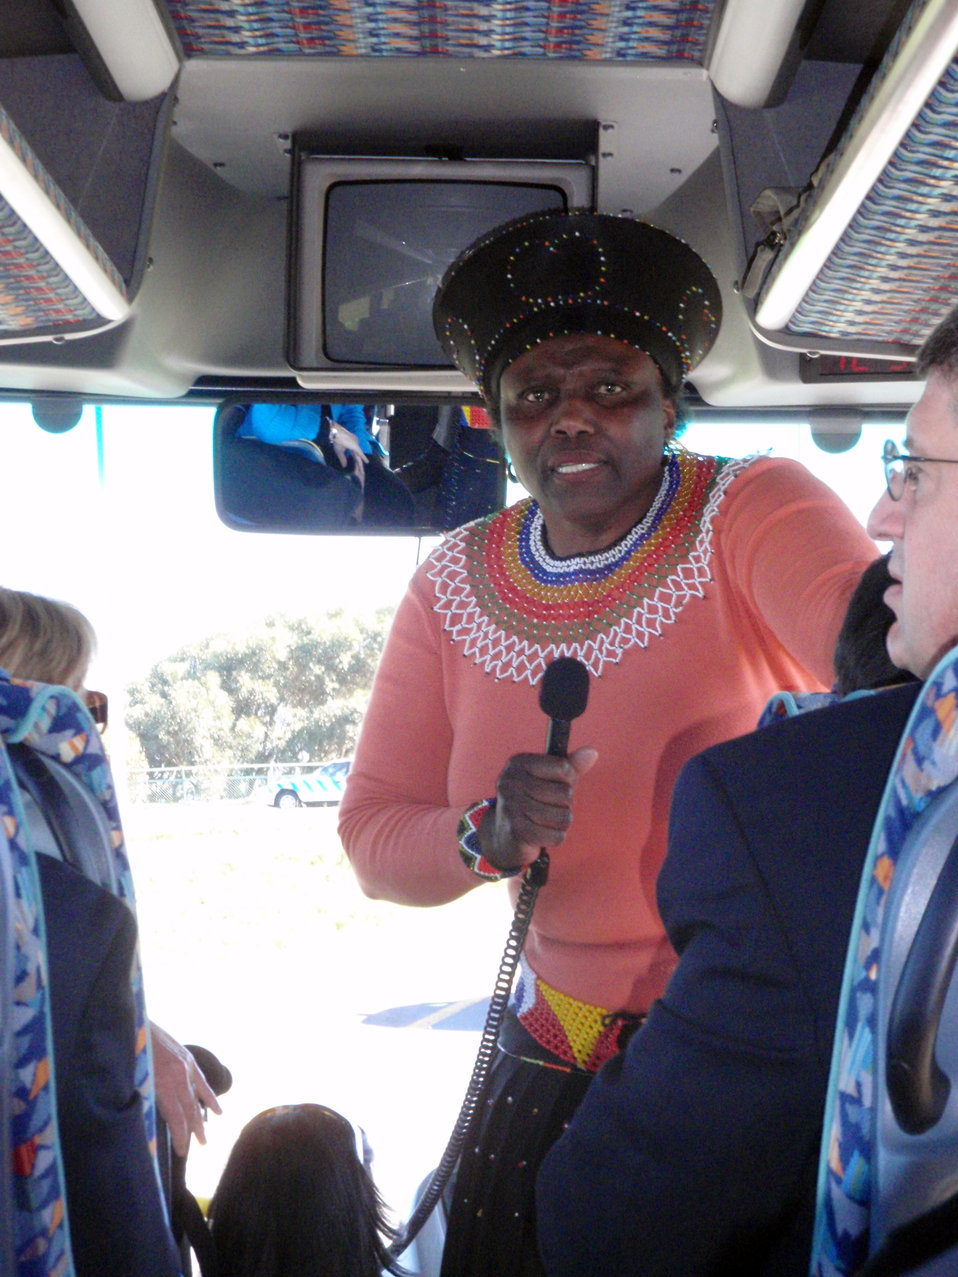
Behind the Scenes: Secretary Clinton Visits Victoria Mxenge Housing Development

Patricia Matolengwe briefs members of the press before arriving at the Victoria Mxenge Housing Development in Cape Town, South Africa August 8, 2009.